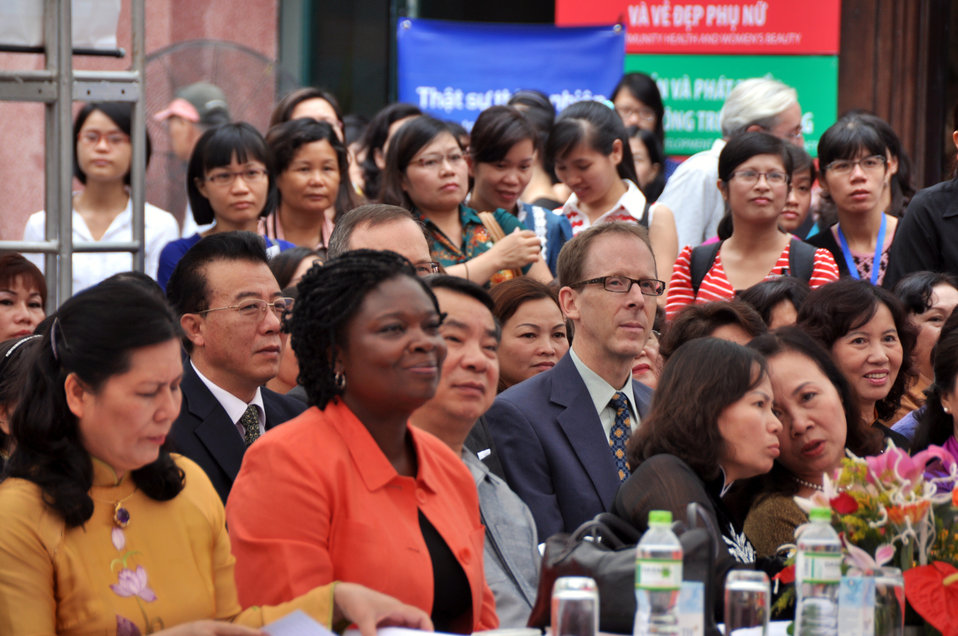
Vietnam Women Innovation Day 2013

Hanoi, October 1, 2013.